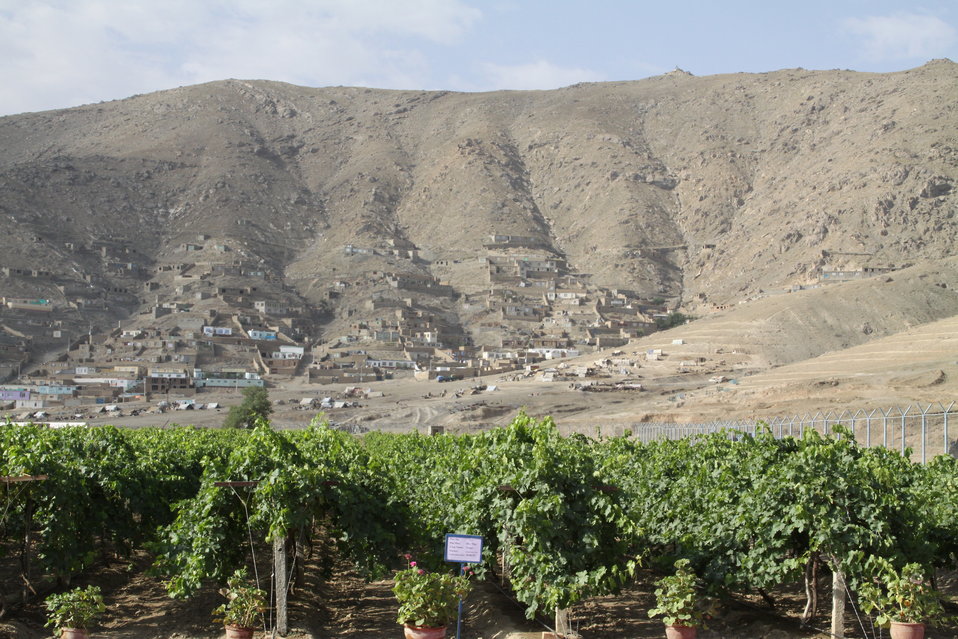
Badam Bagh Farm